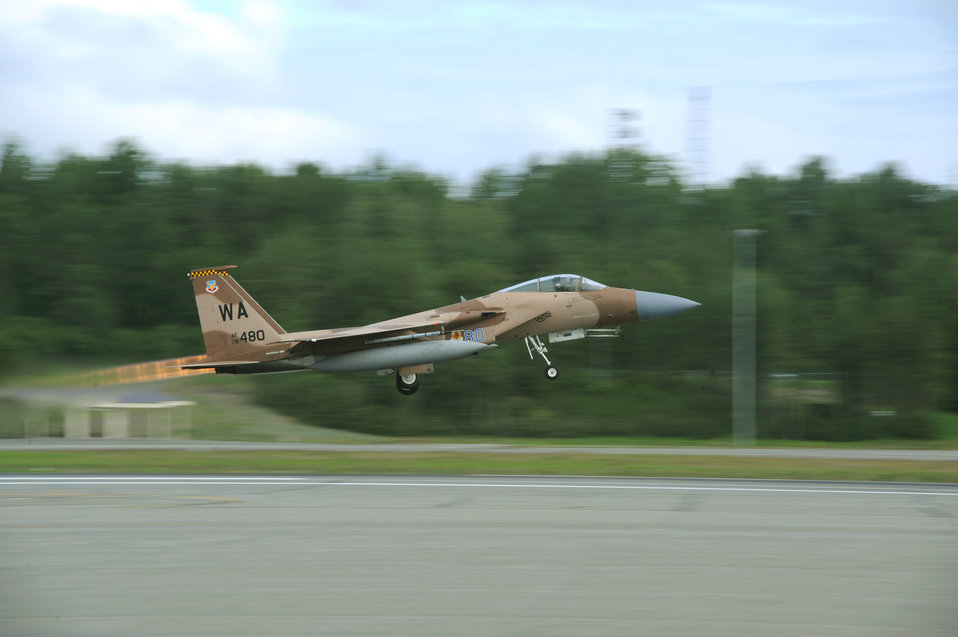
The Eagle spreads its wings

An F-15 Eagle takes off June 13, 2011, during an exercise at Joint Base Elmendorf-Richardson, Alaska.